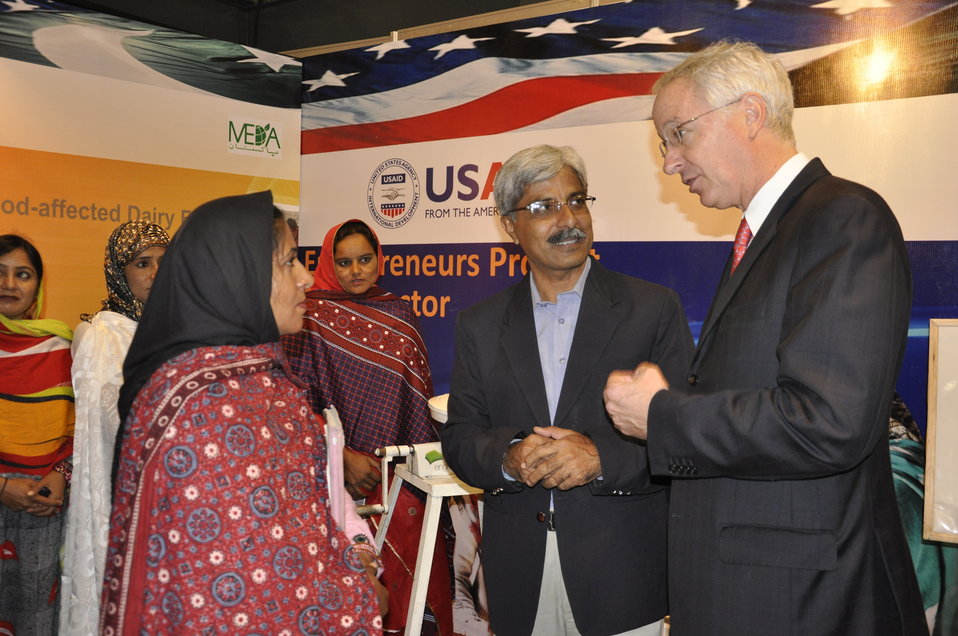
Ambassador Cameron Munter talking to a female livestock extention worker while visiting the Entrepreneurs stall